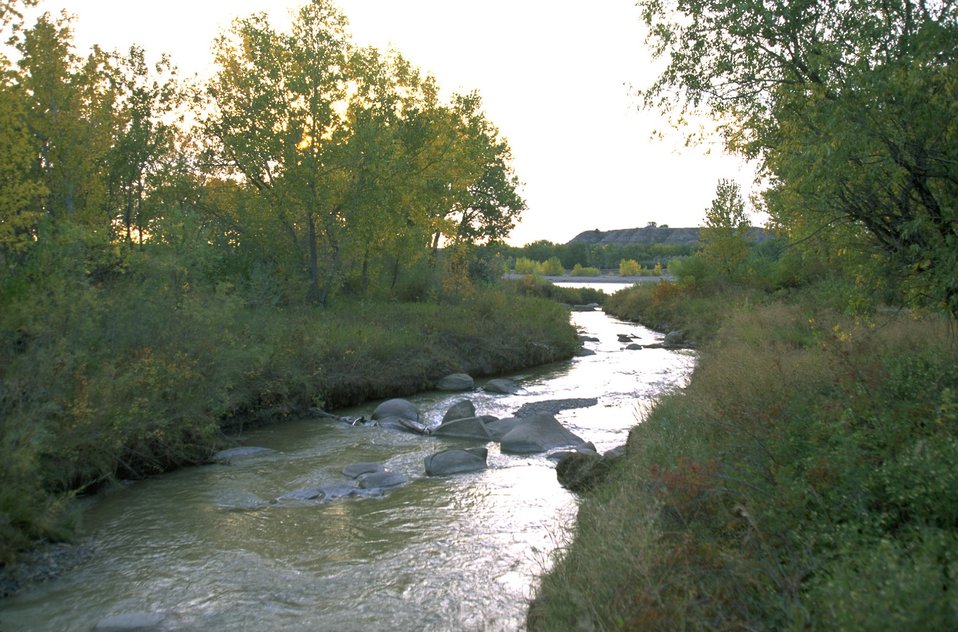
Jones Creek at Matthews Recreation Site